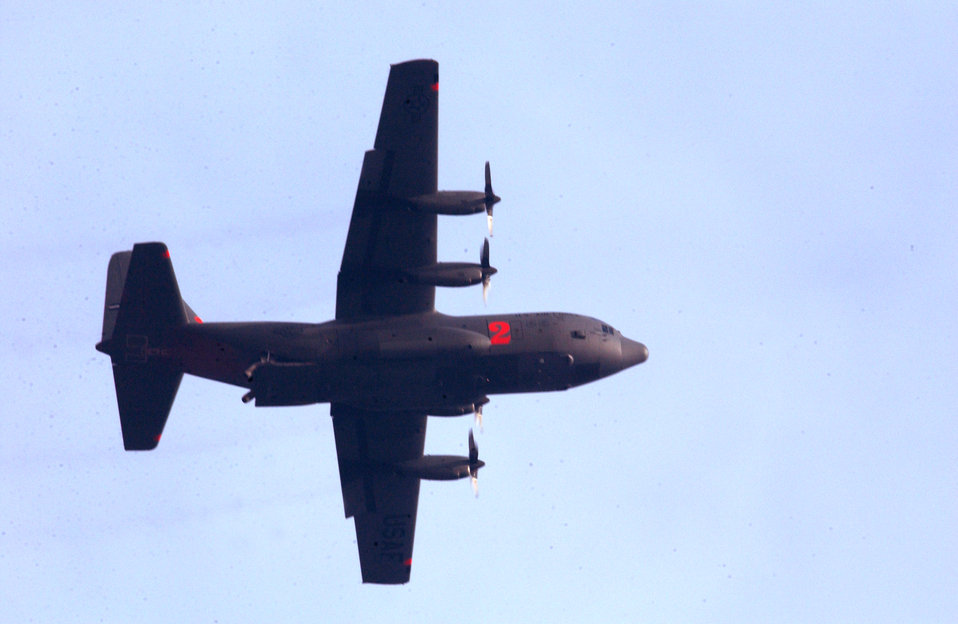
Simi Valley Fire

SOUTHERN CALIFORNIA -- A C-130E Hercules carrying the Modular Airborne Fire Fighting System from the 302nd Airlift Wing at Petersen Field, Colo., prepares to deliver flame retardant onto a wild fire in Simi Valley on Oct. 29. The aircraft were on station helping to quell the numerous fires ravaging California this fire season. Pilots flying eight Air Force C-130 Hercules cargo airplanes have dropped 129,600 gallons of retardant during 48 sorties and 32 flying hours as of Oct. 29.